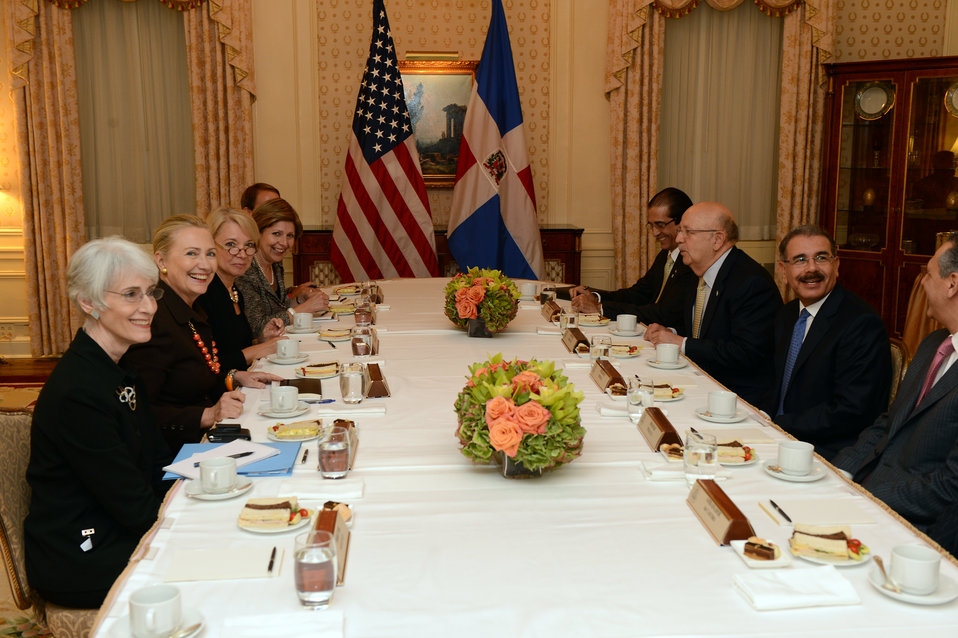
Secretary Clinton Meets With Dominican Republic President Medina

U.S. Secretary of State Hillary Rodham Clinton meets with Dominican Republic President Danilo Medina in New York, New York on September 23, 2012.